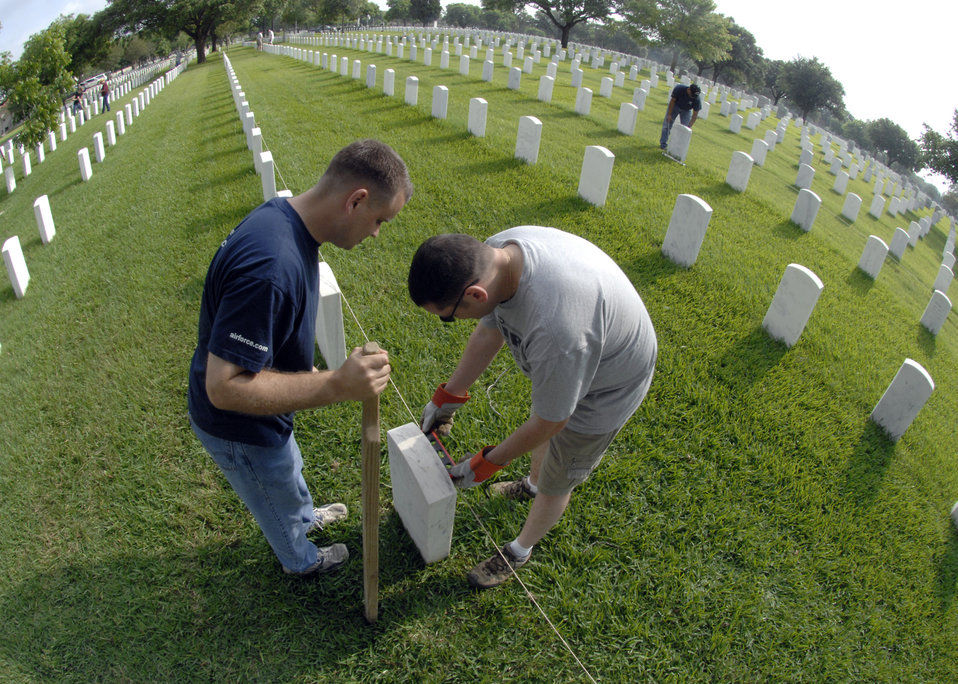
Serving those who served

Technical Sergeants Ryan Hoke (left) and Jason Litalien straighten headstones May 15 at the Fort Sam Houston National Cemetery in San Antonio. This process aligns and straightens all the headstones and prepares the cemetery for funerals and the upcoming Memorial Day weekend. Airmen assigned to the Air Force News Agency in San Antonio spent the day adjusting the headstones.